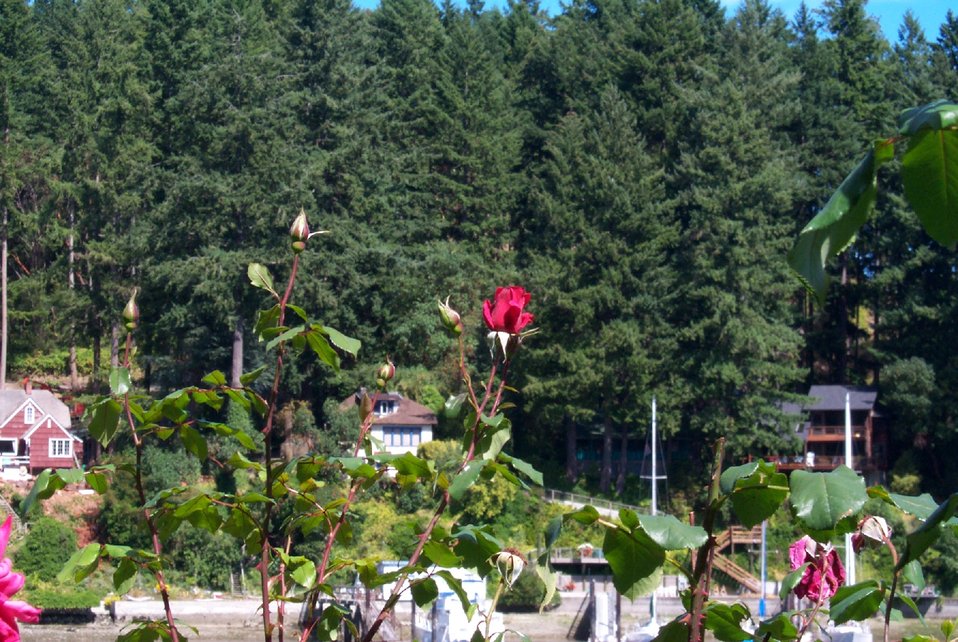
A view inside of Gig Harbor.